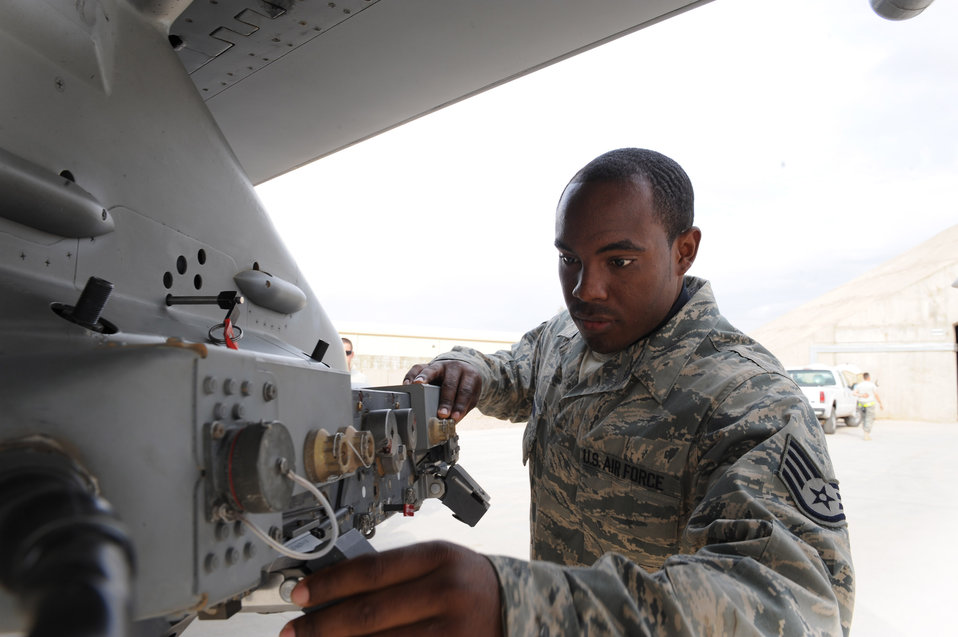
Honoring a brother's sacrifice

Staff Sgt. Joe Nathan Jr. inspects an F-16 Fighting Falcon after its return from a mission Feb. 23 at Joint Base Balad, Iraq. As an F-16 weapons loader, Sergeant Nathan is responsible for loading missiles onto the F-16 as well as performing post-load inspections on the weapons. Sergeant Nathan is a 332nd Expeditionary Aircraft Maintenance Squadron Tiger Aircraft Maintenance Unit weapons loader deployed from Homestead Air Reserve Base, Fla. He is a native of Macon, Ga.